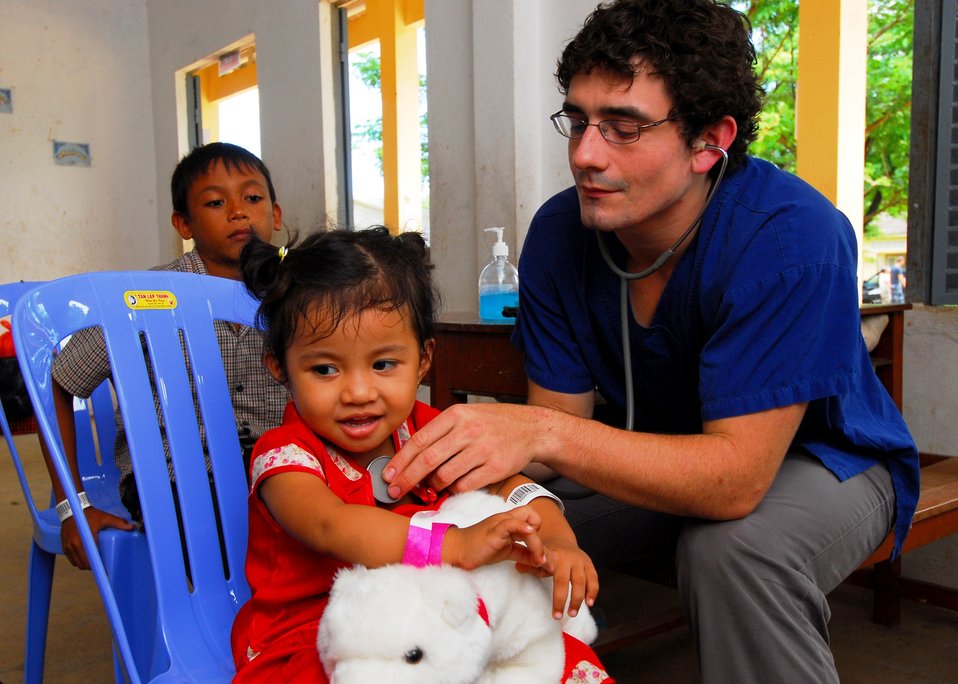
New Zealand Medical Student Philip Drennen Listens to a Child’s Heartbeat

Philip Drennen, a medical student from New Zealand, currently working at Phnom Penh Hospital, listens to a child’s heartbeat on June 24, 2010, in Sihanoukville, Cambodia, during a medical civic action event. The Military Sealift Command hospital ship USNS Mercy (T-AH 19) is in Cambodia in support of Pacific Partnership 2010.